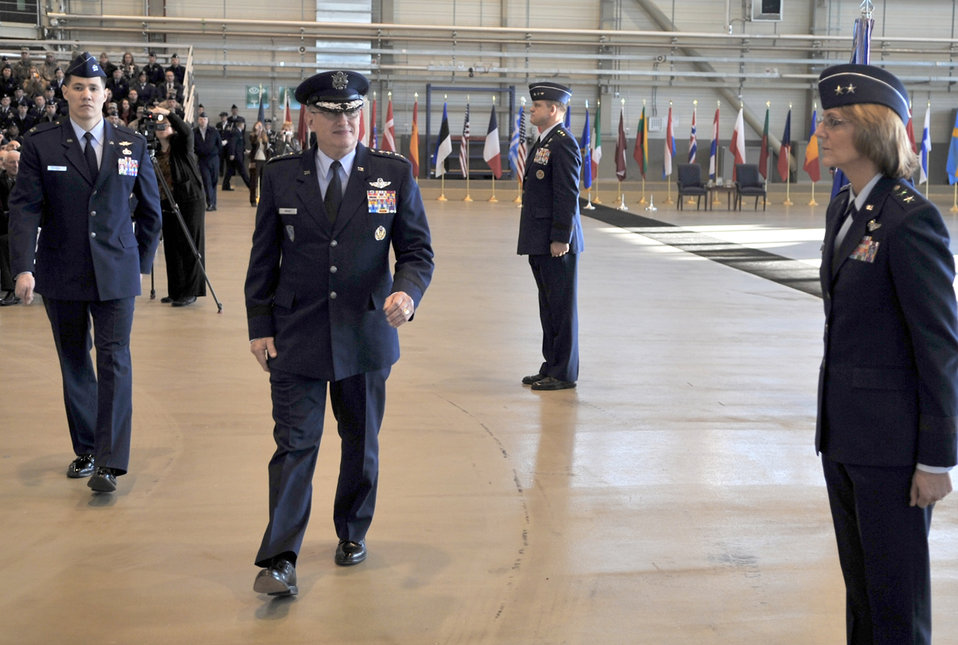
Gen. Mark A. Welsh III takes command of USAFE

Gen. Roger A. Brady, the outgoing U.S. Air Forces in Europe commander, gives a final inspection to his Airmen during a change of command ceremony Dec. 13, 2010, at Ramstein Air Base, Germany. General Brady relinquished command to Gen. Mark A Welsh III during the change of command ceremony, after providing command and control for air, space and missile defense for activities in an area of operations covering almost one-fifth of the world, including 51 countries in Europe, Asia, the Middle East, and the Arctic and Atlantic oceans.